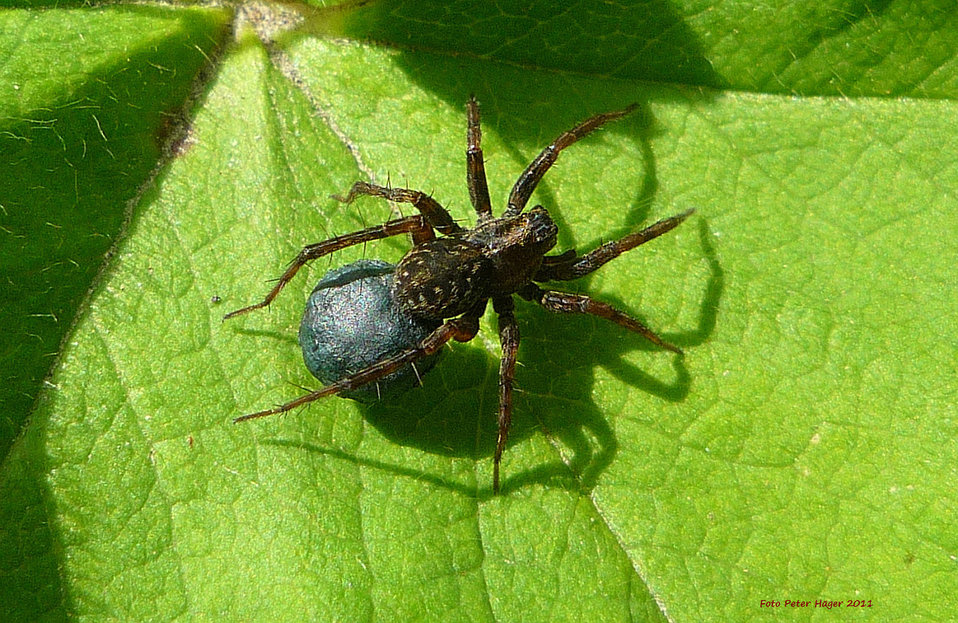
Spider on green leaf.